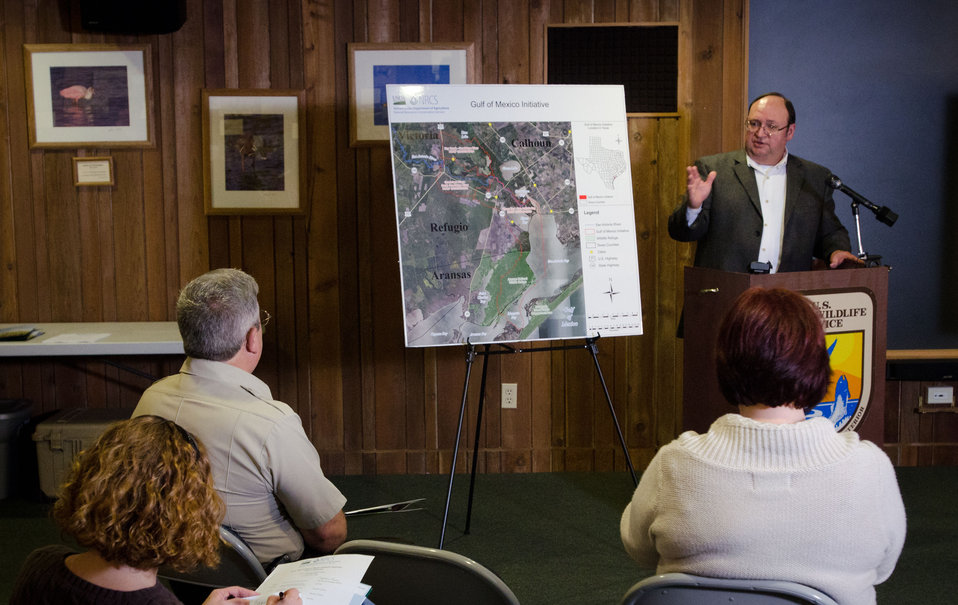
U.S. Department of Agriculture (USDA) Natural Resources Conservation Service (NRCS) State Conservationist Salvador Salinas with Federal and state partners, including representatives from U.S. Fish and Wildlife Service and local soil and water conservation districts (SWCDs) held a press conference at the Aransas National Wildlife Refuge, in Austwell, TX, on Friday, Dec. 16, 2011. Salinas covered the recent announcement of the USDA-NRCS Gulf of Mexico Initiative (GoMI) efforts to improve water quality, habitat, and the health of the Gulf ecosystem. “Launching this initiative is a top priority for NRCS in Texas because the Gulf of Mexico is one of our state’s premier natural resources. It provides vital habitat for wildlife, and creates jobs in industries that depend upon them. The health of this resource is essential to Texas as well as to the nation,” said Salinas.
The Texas initiative focuses on three watersheds in Refugio, Calhoun, Victoria and Aransas counties and ultimately the Gulf of Mexico. “What is really compelling about GoMI and other similar conservation efforts is that they prove that Texas farmers and ranchers not only feed and clothe us and power our vehicles, but they can also help protect and restore our rivers and provide more habitat for wildlife,” stated Salinas. “That’s why it is important that this conservation project is not about taking productive farm land out of production. This is a working lands initiative, so that not only are we helping to restore the health of the Gulf, but we’re also helping to sustain and enhance the productivity of the Gulf’s farms and ranches.”